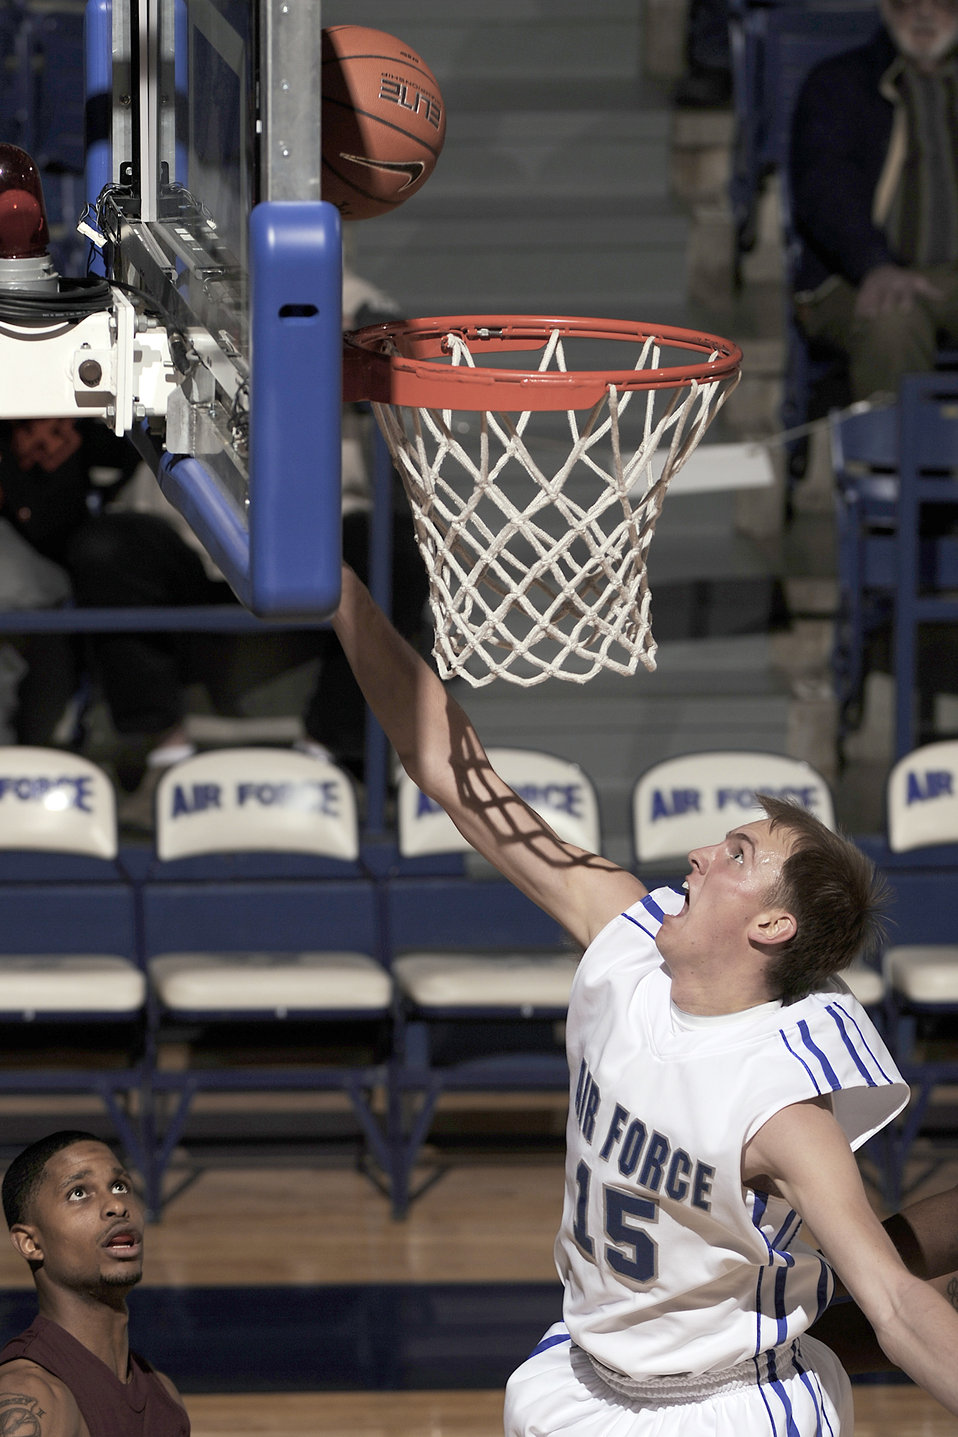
Falcons defeat the Eagles

Air Force Academy junior Taylor Stewart goes in for the layup as the Falcons defeat North Carolina Central 73-56, Dec 11, 2010, at Clune Arena in Colorado Springs, Colo. Stewart finished the game with a season-high 10 points, also collecting a season-best 7 rebounds.